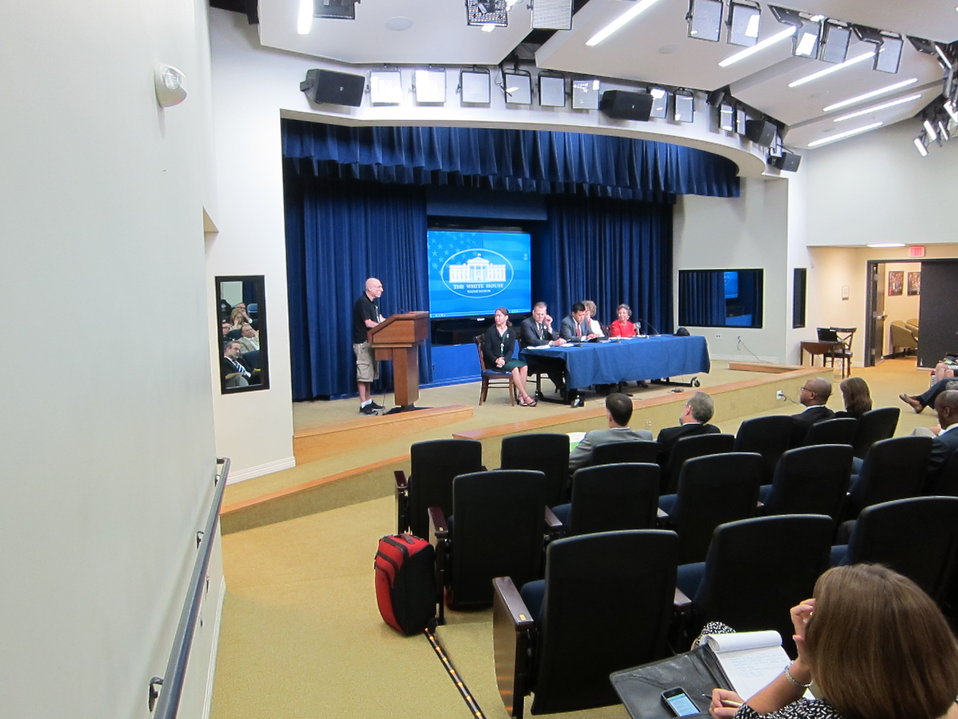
WH 2012 World Hepatitis Day Event